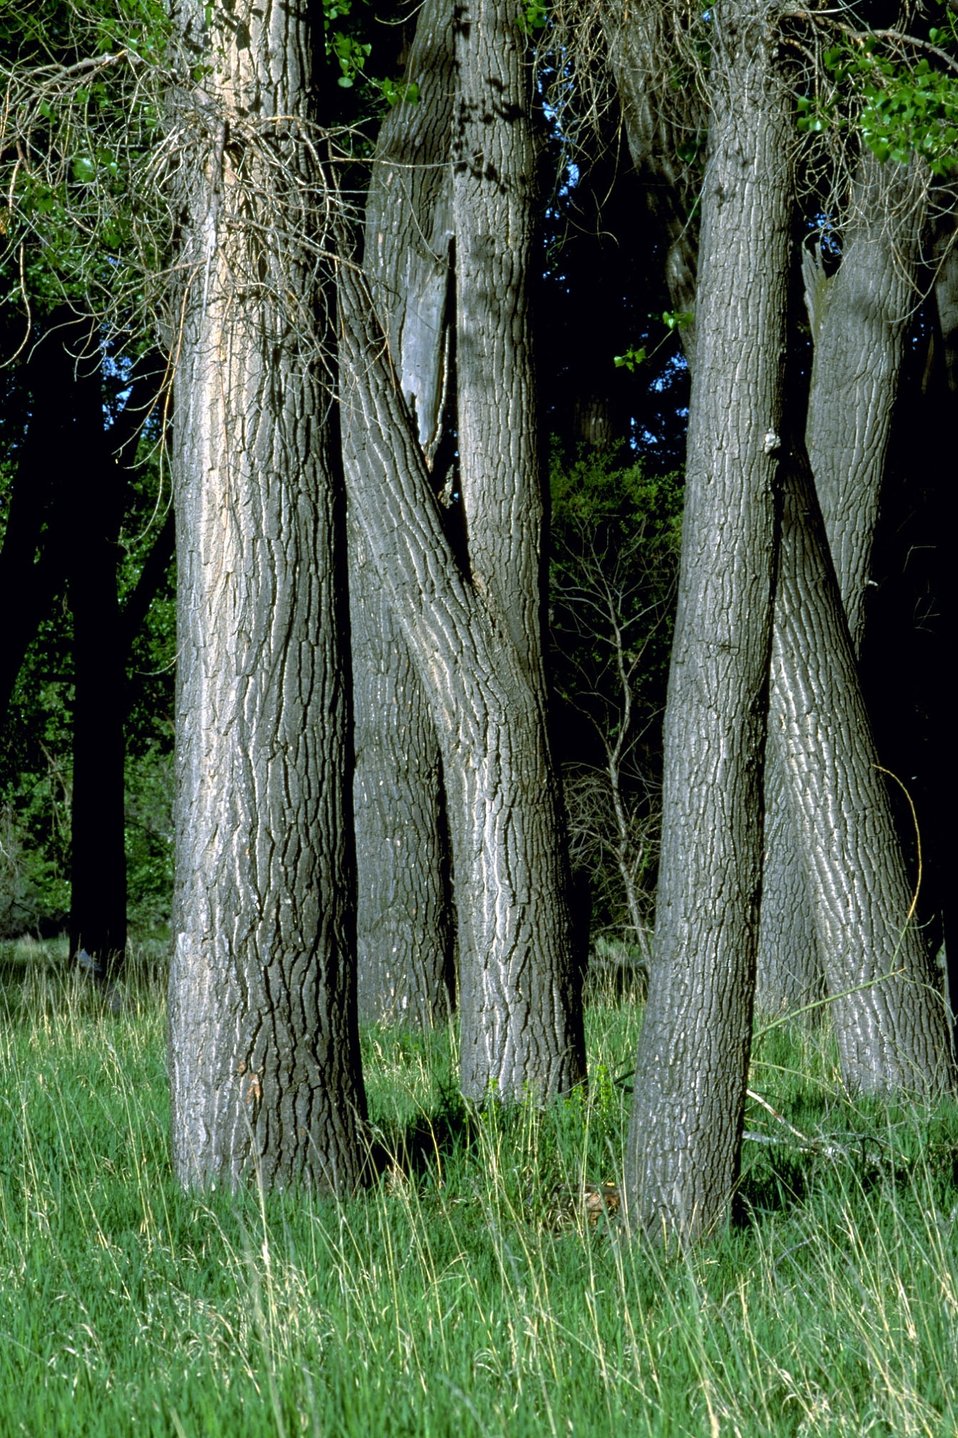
Trunks of cottonwood trees